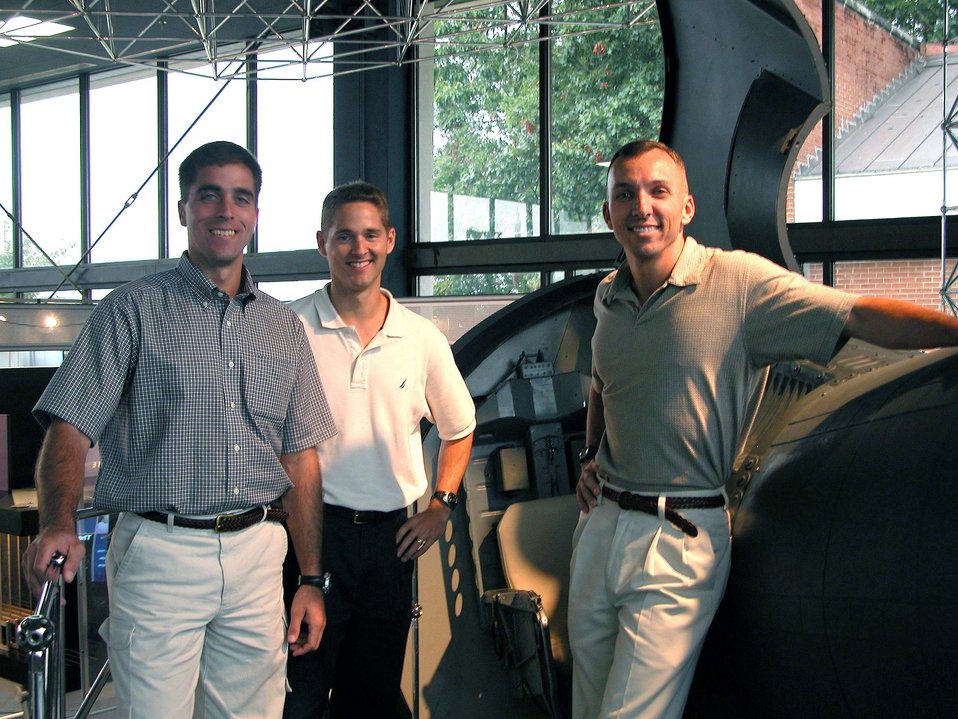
Military astronaut trainees excited, ready

GODDARD SPACE FLIGHT CENTER, Md. -- (From left) Navy Lt. Cmdr. Christopher Cassidy, Maj. James Dutton Jr. and Marine Corps Maj. Randy Breznik are three of the four servicemembers selected as candidates for NASA's astronaut training program. They visited here Sept. 15 as part of their orientation. They have been touring NASA facilities nationwide.